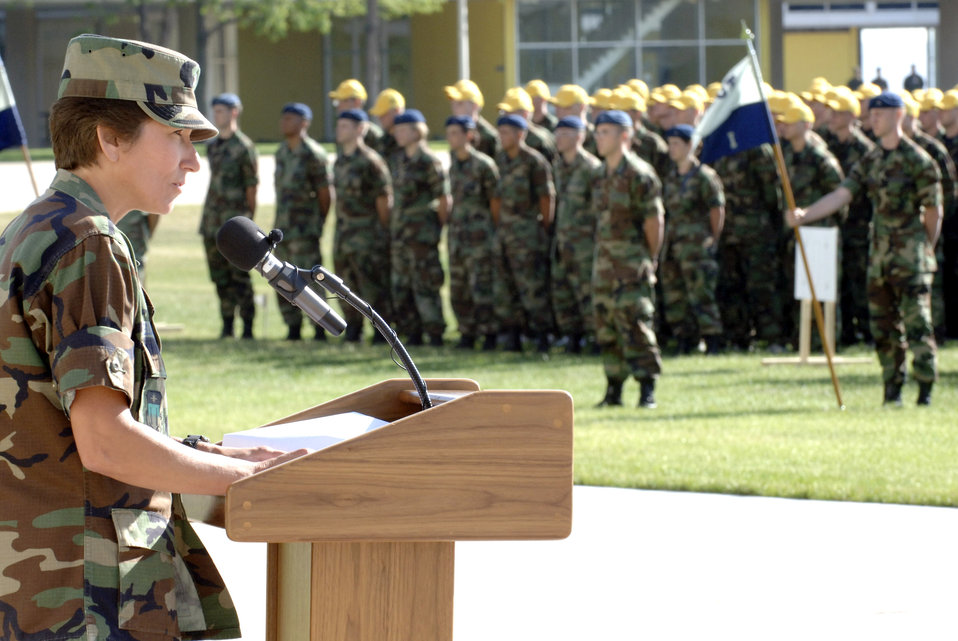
I, do solemnly swear ...

Brig. Gen. Susan Y. Desjardins speaks to basic cadets during the swearing-in ceremony June 29 at the U.S. Air Force Academy in Colorado. General Desjardins is the commandant of cadets. This ceremony marks the beginning of the first half of basic cadet training, commonly known as